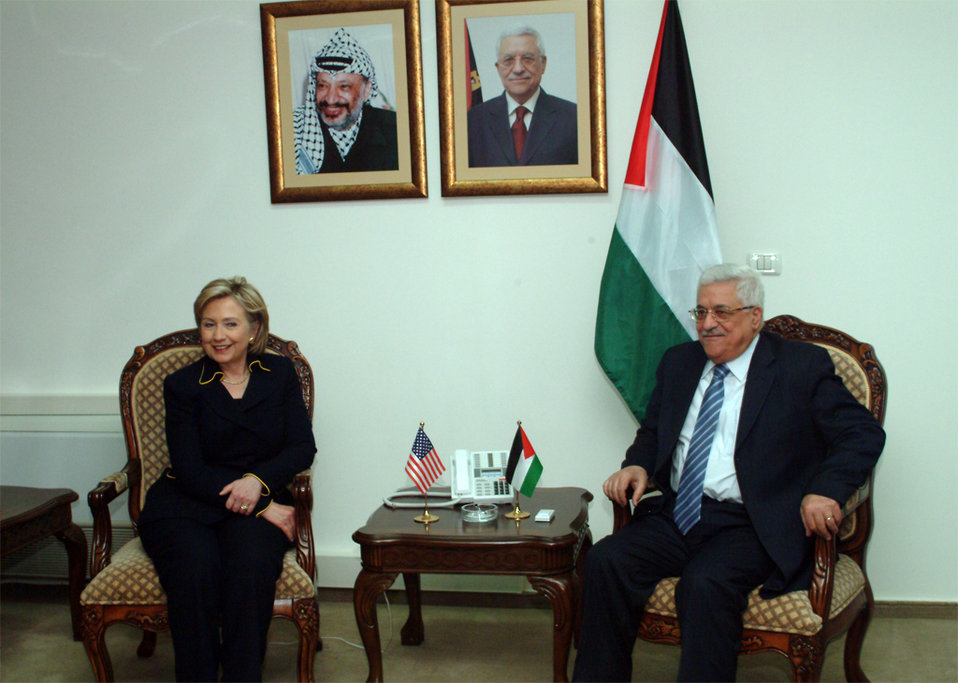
Secretary Clinton with Palestinian Authority President Mahmoud Abbas in Ramallah March 4, 2009.